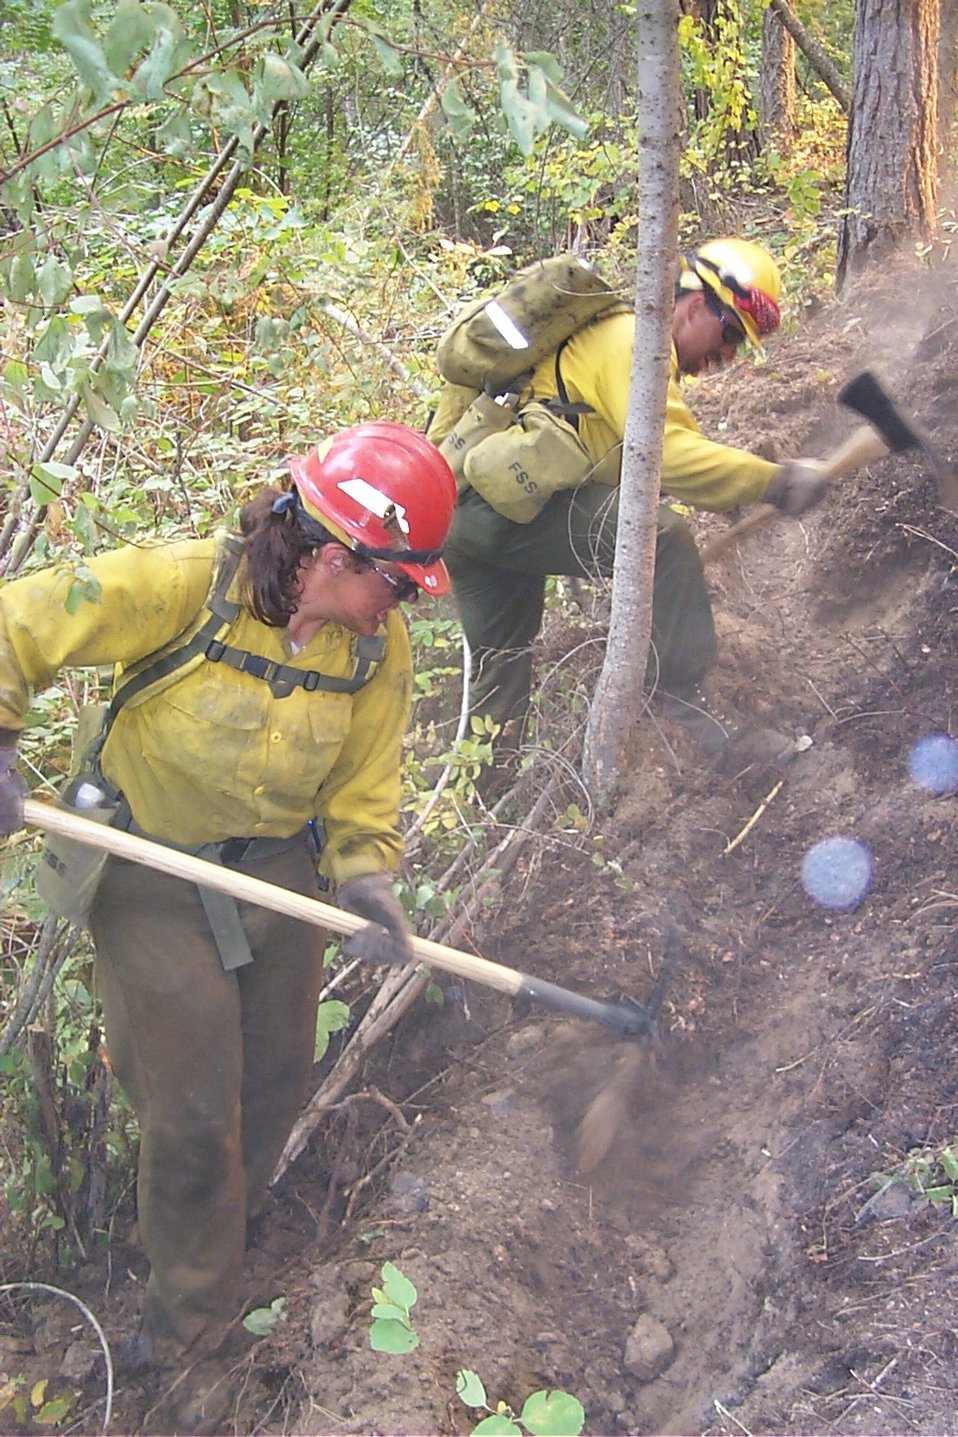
Line crew Fire Clearwater Fire Salmon Field Office USRD Upper Snake River District